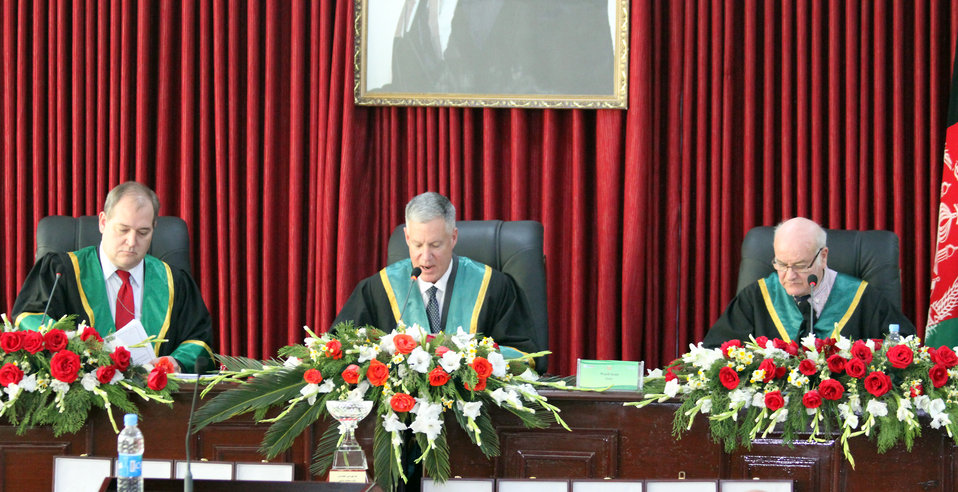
Afghanistan Final National Round of the 2013 Philip C.Jessup International Law Moot Court Competition